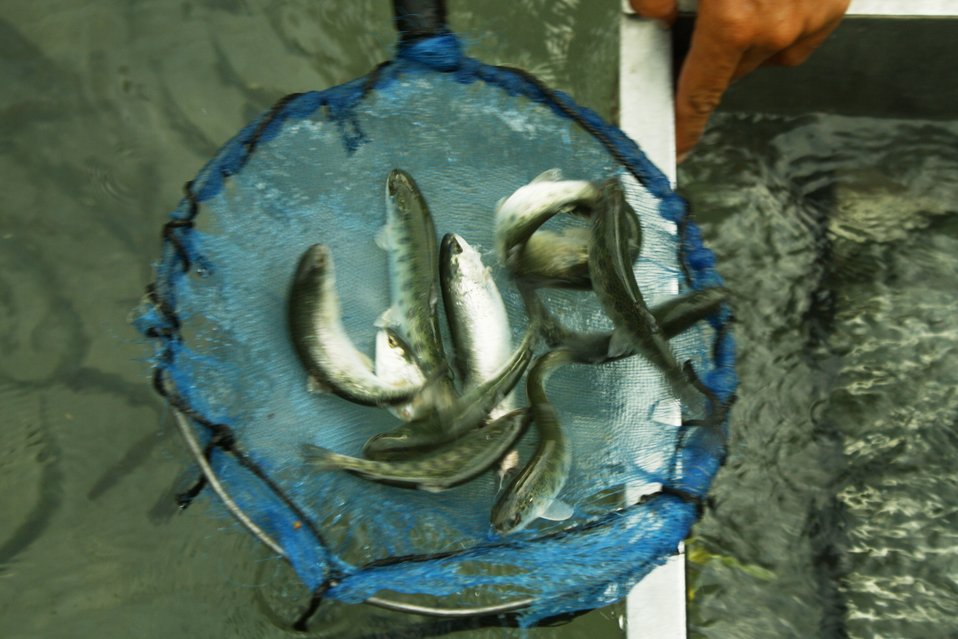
USAID helps rehabilitate hotels and fish farms in battered Swat Valley - 3

USAID provided fish eggs and feed have enabled beneficiary trout farmers to achieve unprecedented fish growth and harvest marketable trout stock in record time. Trout fish, once the pride of Swat, is once again available for sale and consumption in the valley.